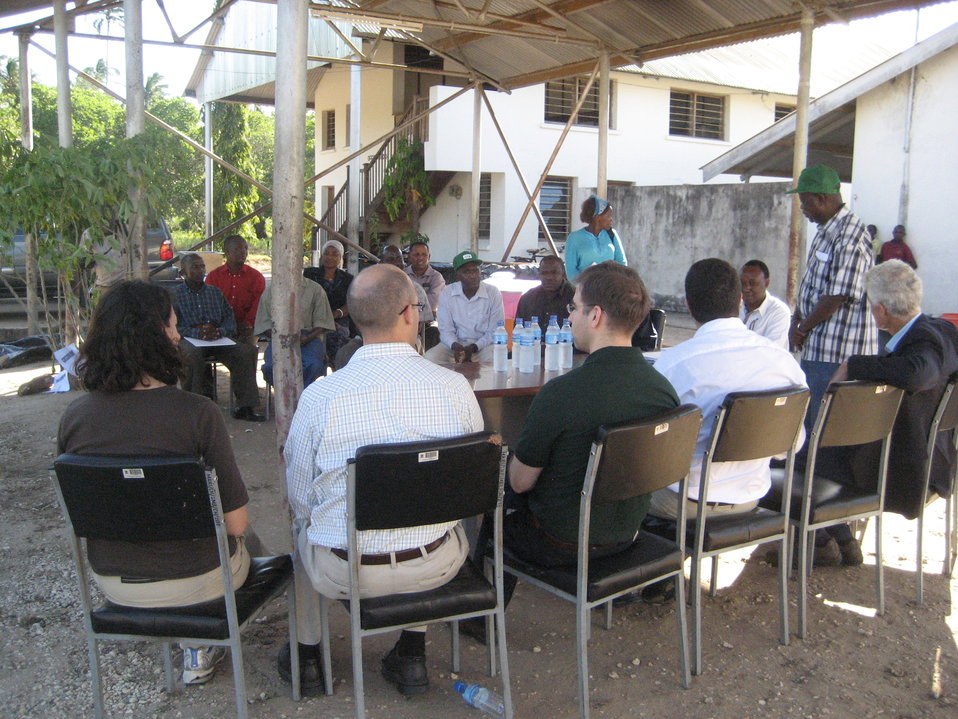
Deputy Secretary Neal Wolin’s trip to Africa 2009

Joined by local farmers, Deputy Secretary Wolin is briefed on IITA’s activities in Tanzania and their adaptive research on cassava. IITA’s work in Tanzania has resulted in modern processing methods and equipment to produce safe cassava products. Funded by USAID, the World Bank and a variety of other development partners, IITA is an international non-profit research organization whose mission is to enhance food security and improve livelihoods in Africa through research-for-development.